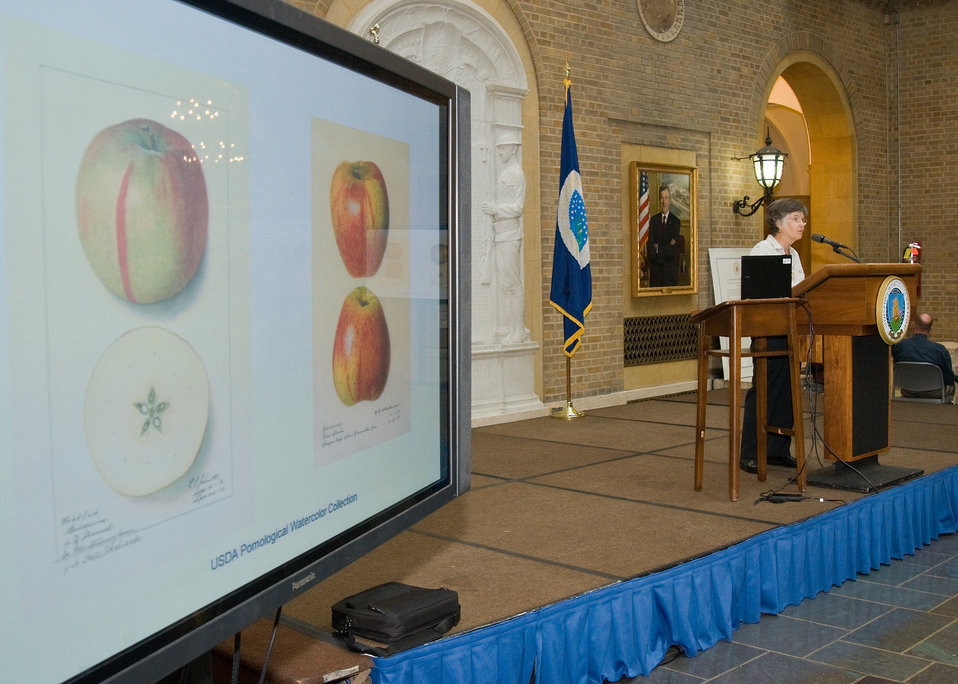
Ellen Mann, Library Technician, Special Collections, National Agricultural Library located in Beltsville, Maryland, spoke at the Celebrating Science: Bed Bugs...Chocolate...and Beyond event at the United States Department of Agriculture in Washington, DC, on Monday, October 4, 2010. Mann's discussion was, 'Art Informs Science.' The art of pomology - botanical prints of heirloom fruits and vegetables. USDA Photo 10di1515-09 by Bob Nichols.